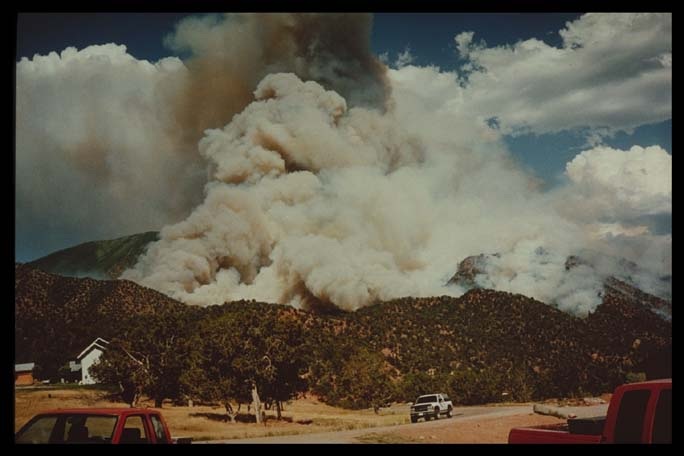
Wildland fire